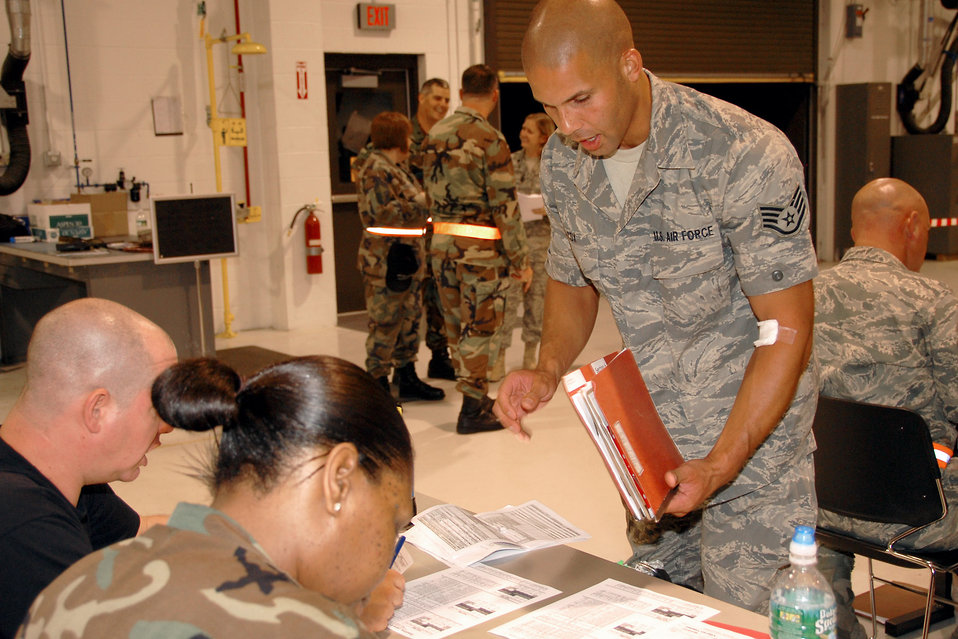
Arriving home!

Staff Sgt. Preston Cox, with the 174th Fighter Wing at Hancock Field, N.Y., works his way through the processing line after returning from a deployment to Southwest Asia in support of Operation Iraqi Freedom.